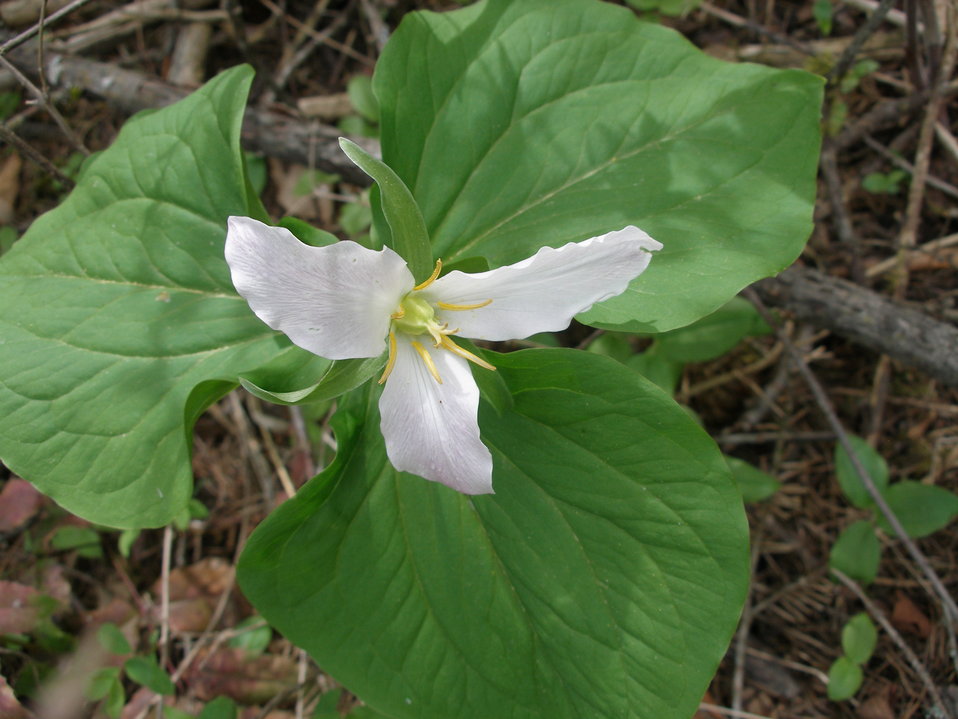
Western Montana Trillium

In Montana, a trillium takes almost 20 years to reach its three-leaf reproductive flowering stage. As you walk the Nature Trail at the Creston National Fish Hatchery in May, you will see many of these amazing flowers.

Location: Creston National Fish Hatchery

Credit: Evie Bradley / USFWS

Photo Contest Entry #110